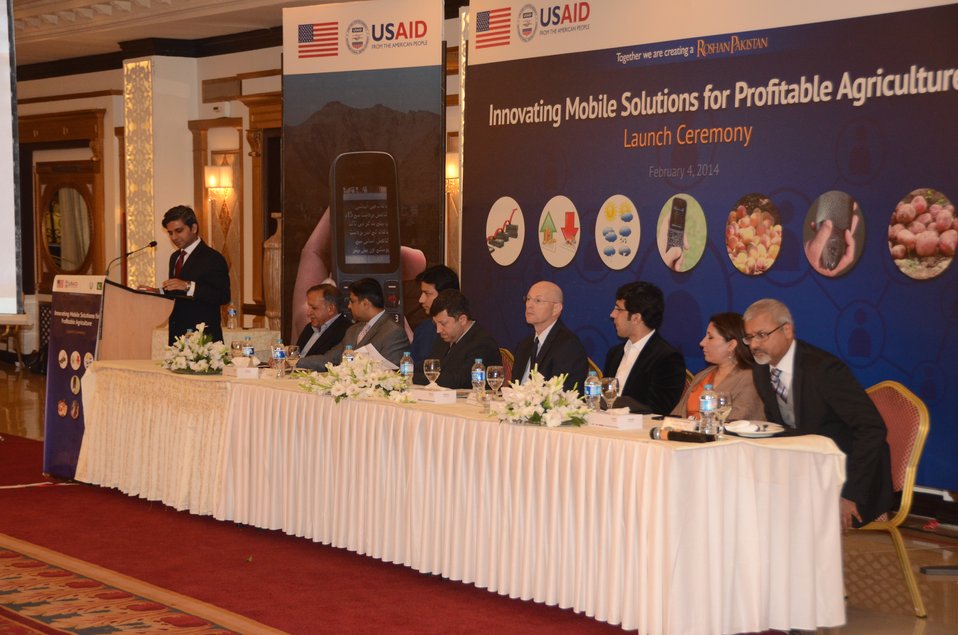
Gregory Gottlieb Mission Director USAID and Shahram Khan Tarrakai Minister for Agriculture, Livestock and Cooperation KP with other dignitaries at the launch ceremony